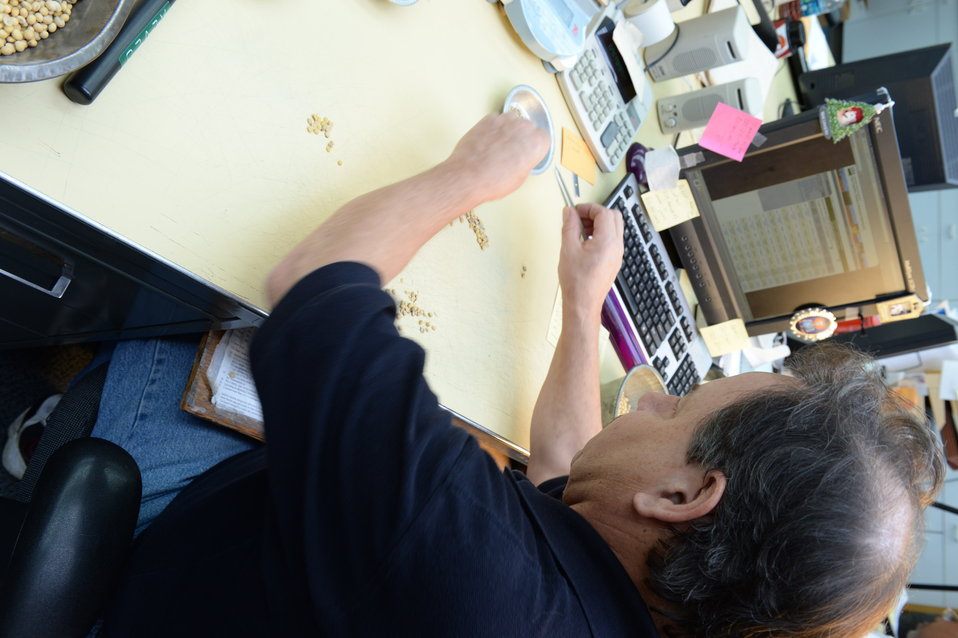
U.S. Department of Agriculture (USDA) Grain Inspection, Packers and Stockyards Administration (GIPSA) Federal Grain Inspection Service (FGIS) employee examines grain samples at the FGIS inspection laboratory in New Orleans, LA on Monday, Nov. 18, 2013.